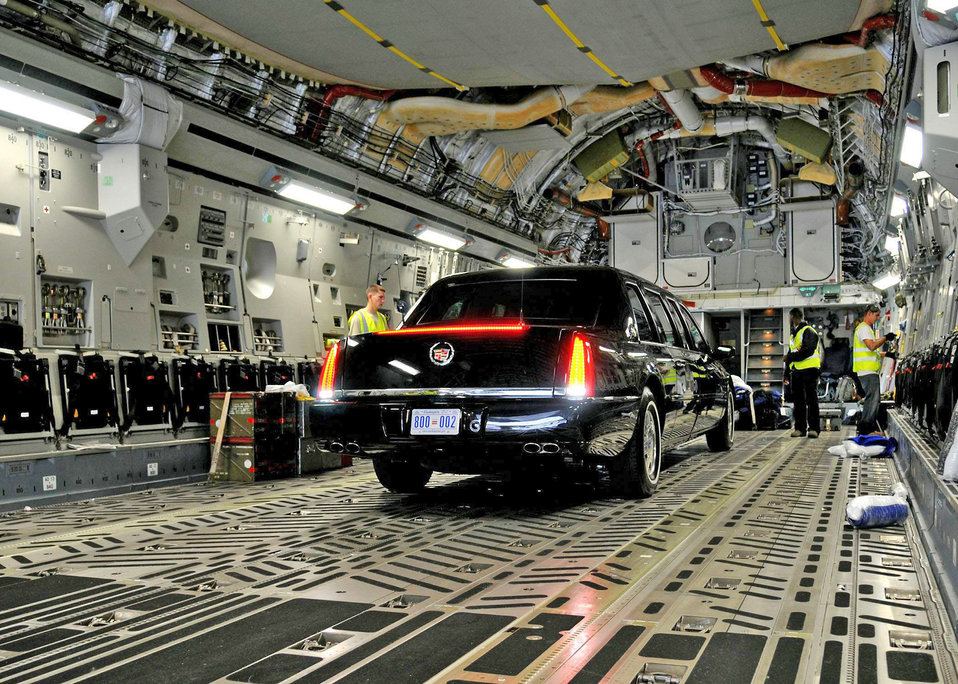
17th Air Force members support presidential visit to Ghana

Airmen from the 621st Contingency Response Wing assist aircrew personnel in offloading a presidential limousine from a C-17 Globemaster III at Kotoka International Airport July 8 at Accra, Ghana. The Airmen were among more than 150 Airmen, Sailors and Marines in Ghana and Sailors aboard the USS Iwo Jima who make up a task force supporting President Barack Obama's visit July 10 and 11. Airmen of the 621st CRW are from at McGuire AFB, N.J.